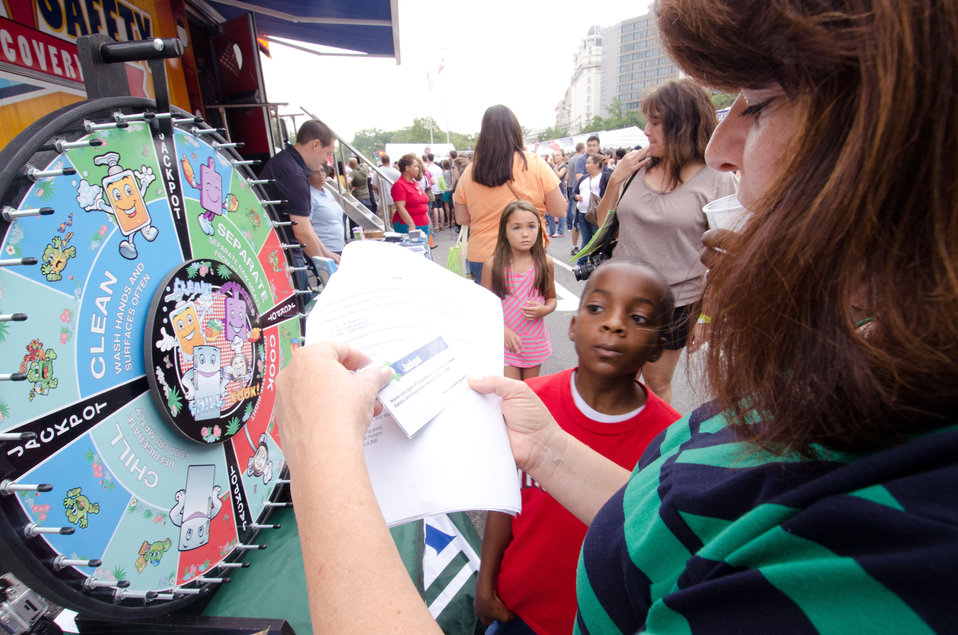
This young visitor spun a jackpot question and answered it correctly, allowing him to choose a digital thermometer for his dad to check the temperature of cooked meat; outside Agriculture’s mobile Discovery Zone at the Taste of DC event, are information materials that answer many every-day questions about maintaining safe food practices at home, additionally, games offered a fun way for children and parents to test their knowledge related to the four main principals of food safety – clean, separate, cook and chill. For more information see www.fsis.usda.gov/foodsafetymobile/
Taste of DC event highlights more than 70 eateries, 30 specialty beer providers, the United Service Organization (USO) Metropolitan Washington, and live bands who anticipate more than 500,000 people to attend over the course of the three-day event, which extends from the White House to the Capitol, along Pennsylvania Ave., in Washington D.C. on October 6, 2012. Agriculture Food Safety and Inspection Service specialists present talks and cooking demonstrations.